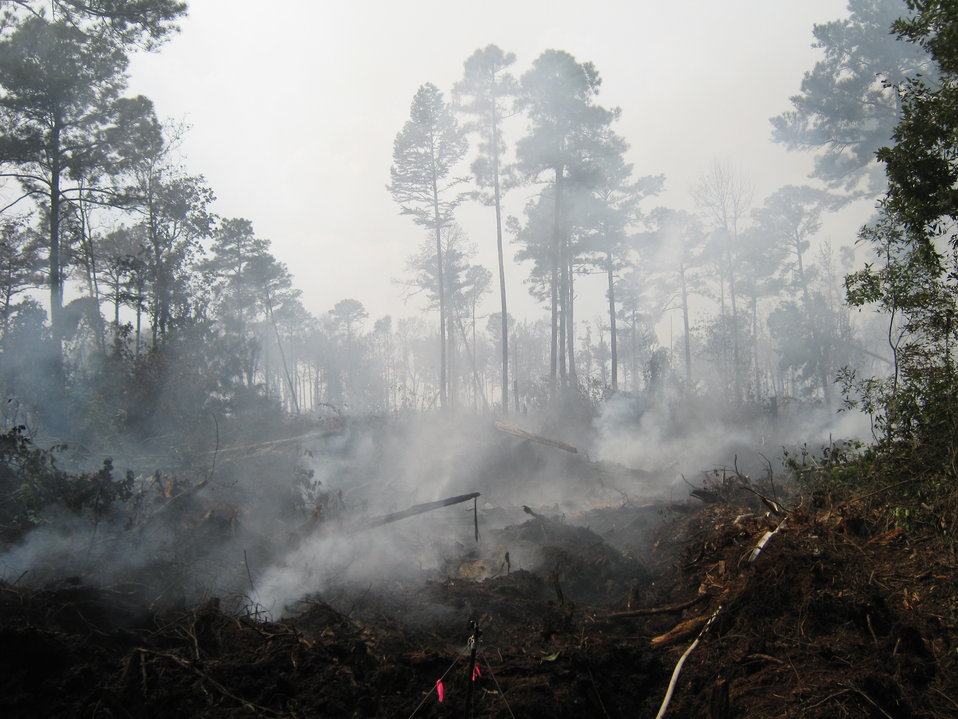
Smoldering Division Bravo

Suffolk, VA, August 2011. Fire in peat smolders in the foregound in Division B on the eastern flank of the Lateral West Fire burning on Great Dismal Swamp National Wildlife Refuge. Trees standing in the background will likely fall due to peat burning below their roots.